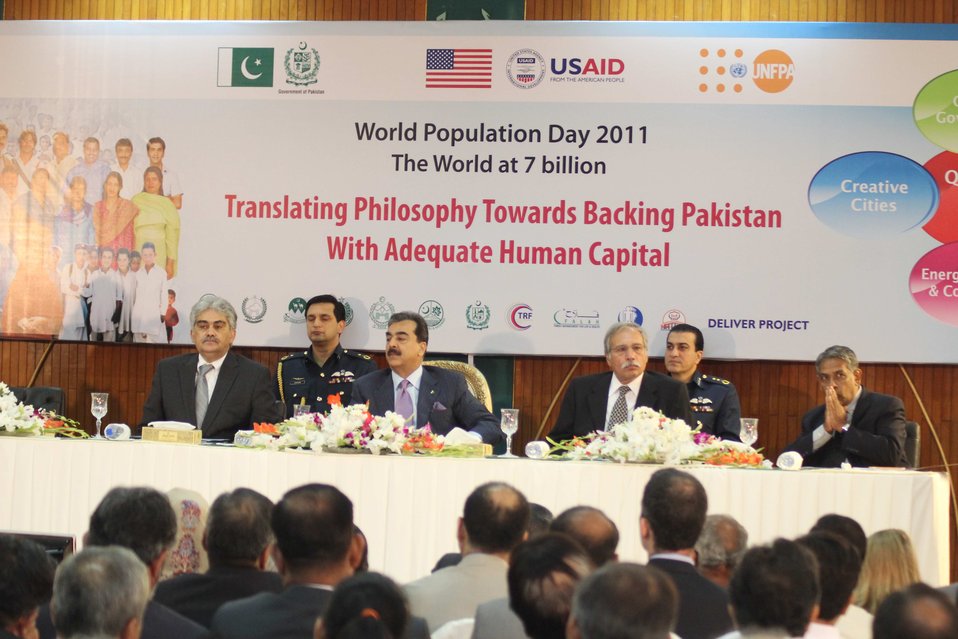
World Population Day -- Launch of Logistic Management Information System and Contraceptive Procurement Manual

The USAID-supported Logistics Management Information System is Pakistan’s first web-based system designed to help health care officials track and thereby improve the supply of contraceptives to the public health system. Currently, the Government of Pakistan uses a paper-based system with a two-month lag in reporting, which impedes the ability of the health departments to respond to the needs of the health facilities.

The system will be used by population and health departments at the federal, provincial, and district levels, in line with the devolution of health services under the 18th Amendment to the Pakistani constitution. It will also work in collaboration with the United Nations Population Fund and non-governmental organizations.

Additionally, USAID helped design the Contraceptive Procurement Manual that presents best practices in international procurement and promotes transparency, accountability, and efficiency in the procurement process.